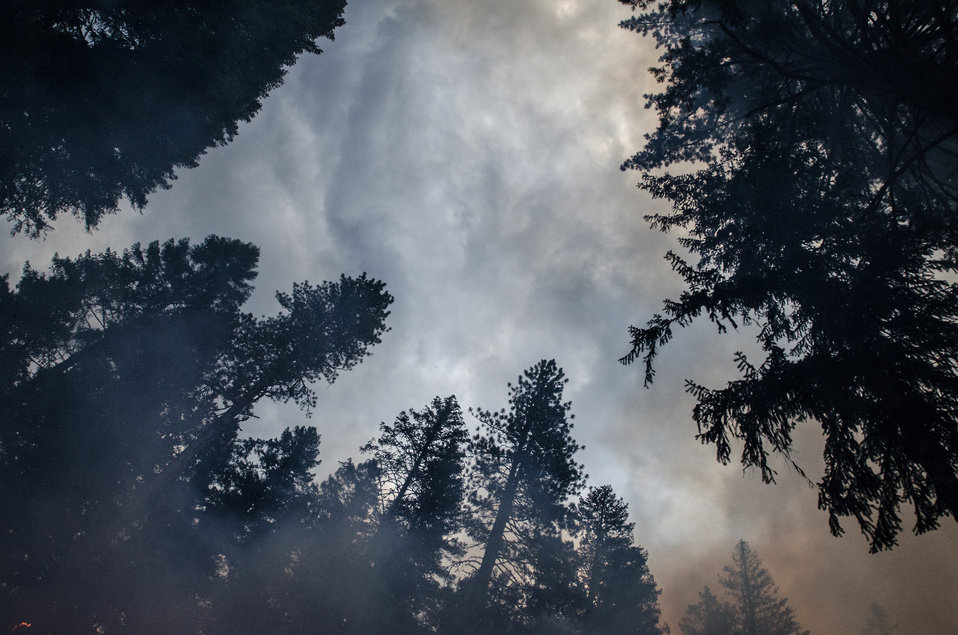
Geronimo Interagency Hotshot Crew, Department of the Interior (DOI) Indian Affairs (IA) Bureau of Indian Affairs (BIA) San Carlos Agency in Arizona; on assignment at the Big Windy Complex Wildlands Fire, approximately 15 miles west of Interstate-5 and East Northeast of Galice, Oregon, conducts a prescribed burn 'burnout' operation to help stop the main fire that may head toward this roadway, on Friday, Aug 9, 2013. The primary mission of the Interagency Hotshot Crews (IHC) is to provide a safe, organized, mobile and highly skilled hand crew for all phases of wildland fire suppression. The arduous duties and specialized assignments required of IHC personnel require uniform staffing, certification, training, equipment, communications, transportation, organization, and qualifications that adhere to interagency standards and guidelines.